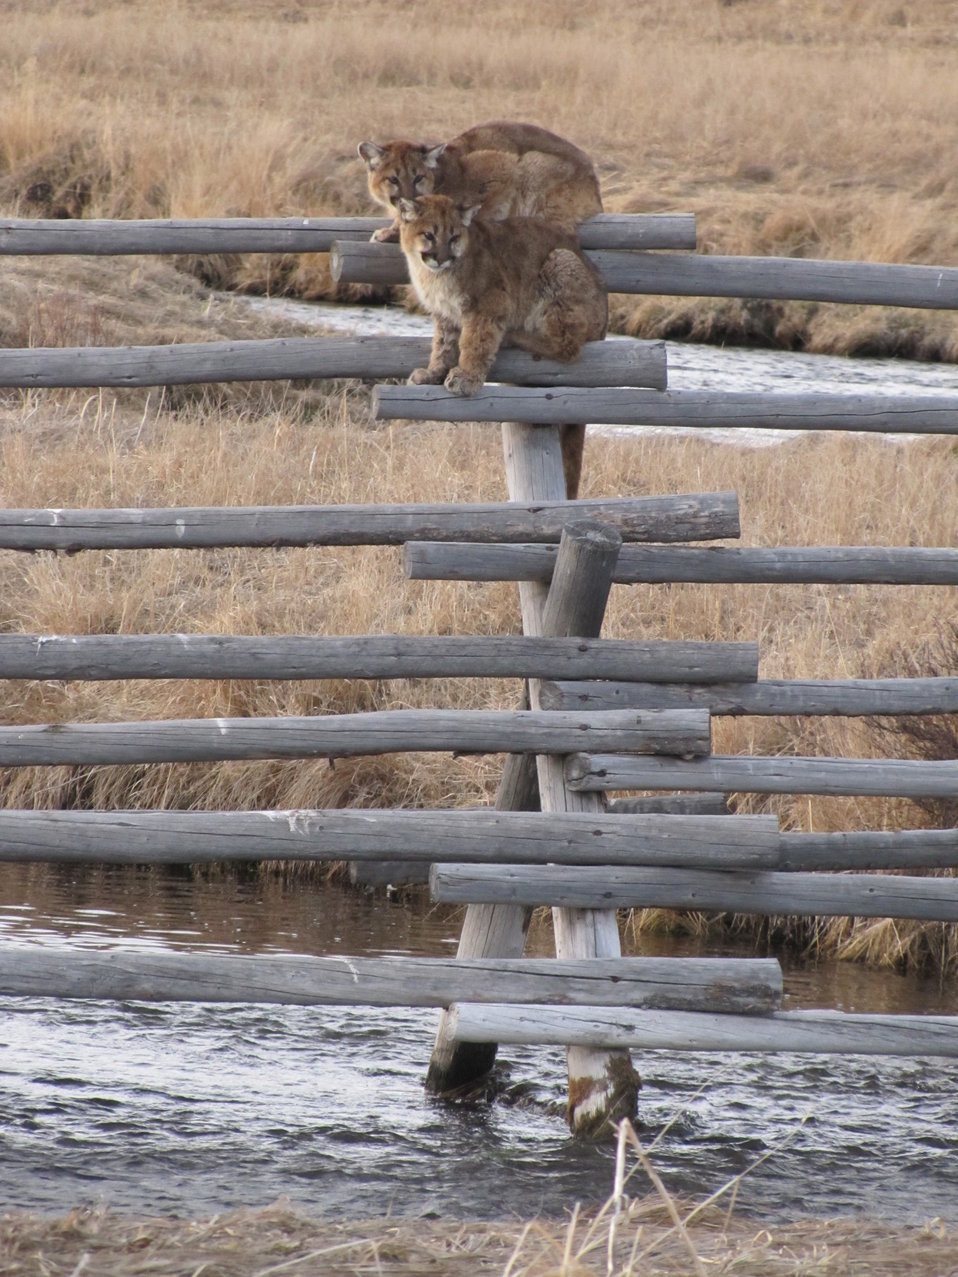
Not a Good Place to Be

One in a series of seven photos:

The National Elk Refuge's Outdoor Recreation Planner witnessed a spectacular standoff between two juvenile mountain lions and five coyotes. The coyotes let the cats know they weren’t welcome in the area. The mountain lions sought safety on a buck and rail fence for over an hour while the coyotes lurked in the background.

With flowing creek water underneath and threatening coyotes nearby, the cats were in a precarious position.

Credit: Lori Iverson / USFWS

This photo series has gone viral! Join the discussion on our Facebook page: www.facebook.com/photo.php?fbid=595246397154972&set=a...